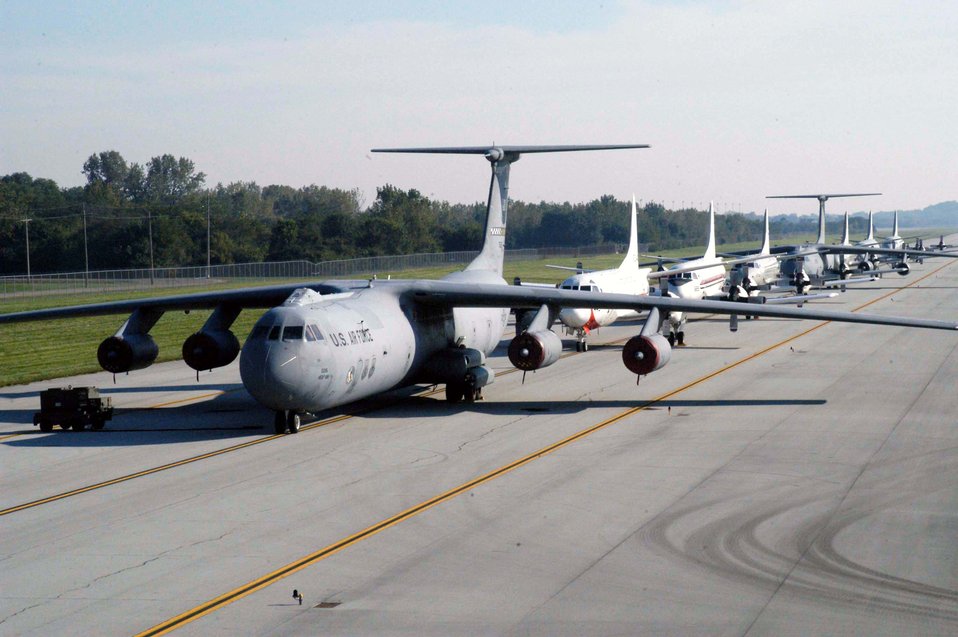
Standing by

WRIGHT-PATTERSON AIR FORCE BASE, Ohio -- C-141 Starlifters and Navy P-3s arrived here Sept. 17 to escape potential damage by Hurricane Isabel. Wright-Patterson AFB serves as one of many safe havens for aircraft needing to evacuate because of severe weather. The C-141s are from Andrews AFB, Md., and the P-3s are from Naval Air Station Patuxent River, Md.